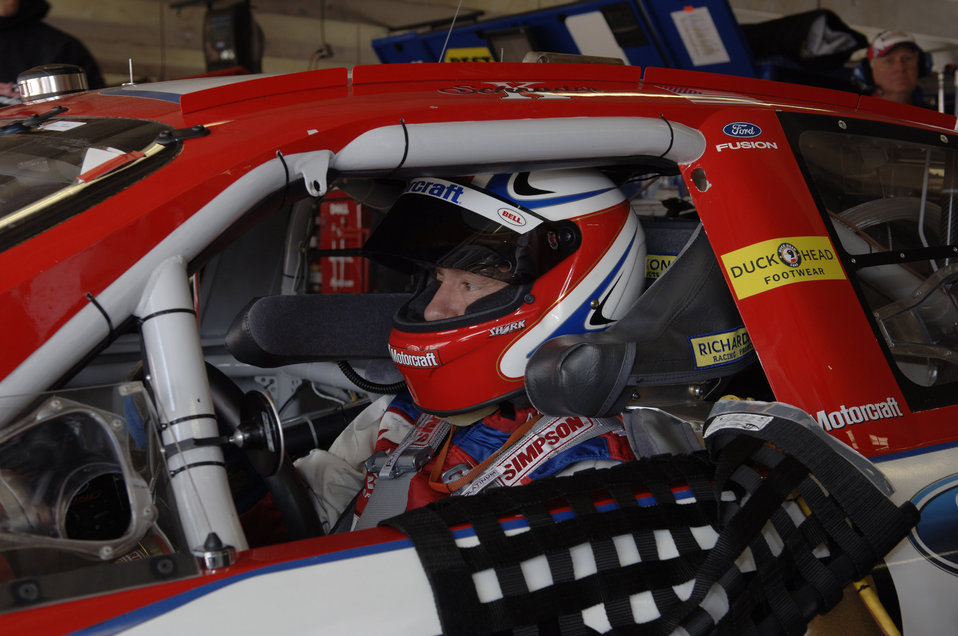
NASCAR thrills

Ken Schrader sits in his NASCAR Nextel Cup Series Air Force number 21 car before the final practice session Saturday, April 8, 2006, for the Samsung/Radio Shack 500 at Texas Motor Speedway. Schrader started in 32nd position and finished in 16th place.